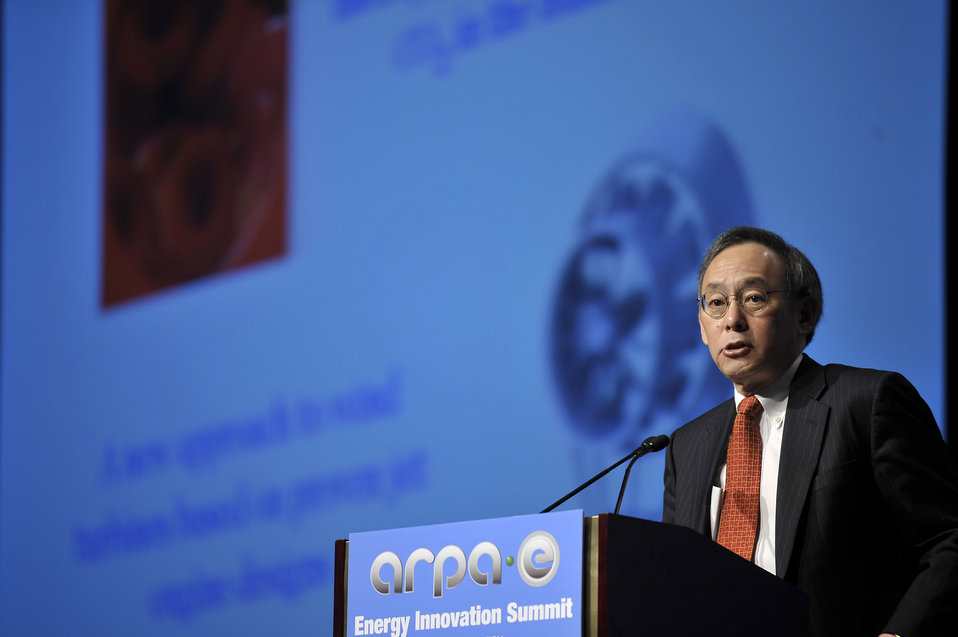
ARPA-E Energy Innovation Summit 2011, 67 of 83

Steven Chu, Secretary, United States Department of Energy.